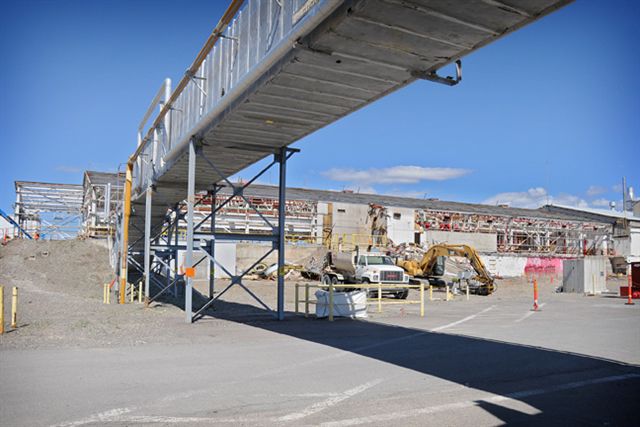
RAN DD INTEC S82 CPP-601 EASTSIDE 070610 P6554-010 A